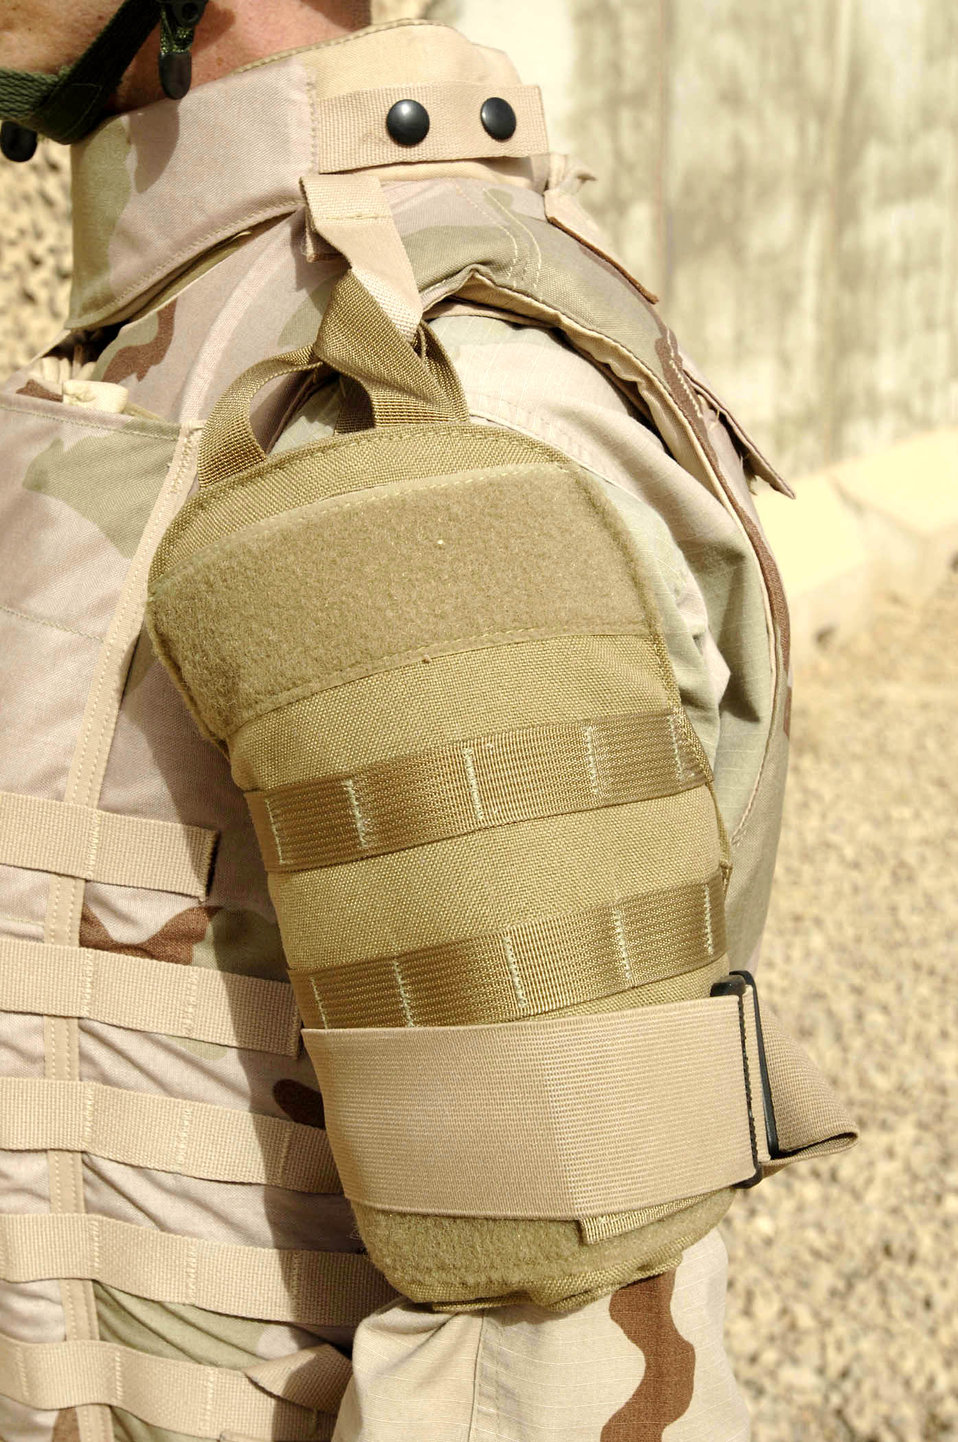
Airman tests new body armor

BALAD AIR BASE, Iraq -- Tech. Sgt. Gerald Lowry displays the bicep protector that is part of the new